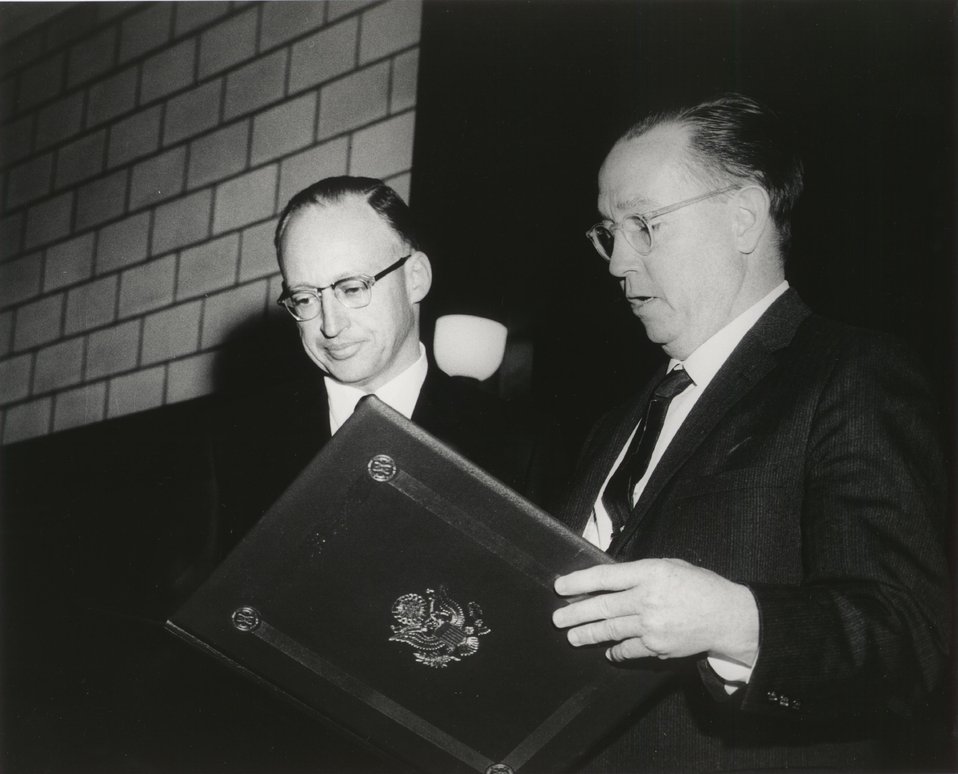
Comm. James T. Ramey, James M. Taub. ERNEST O. LAWRENCE AWARD - 1963. National Academy of Sciences, April 25, 1963.